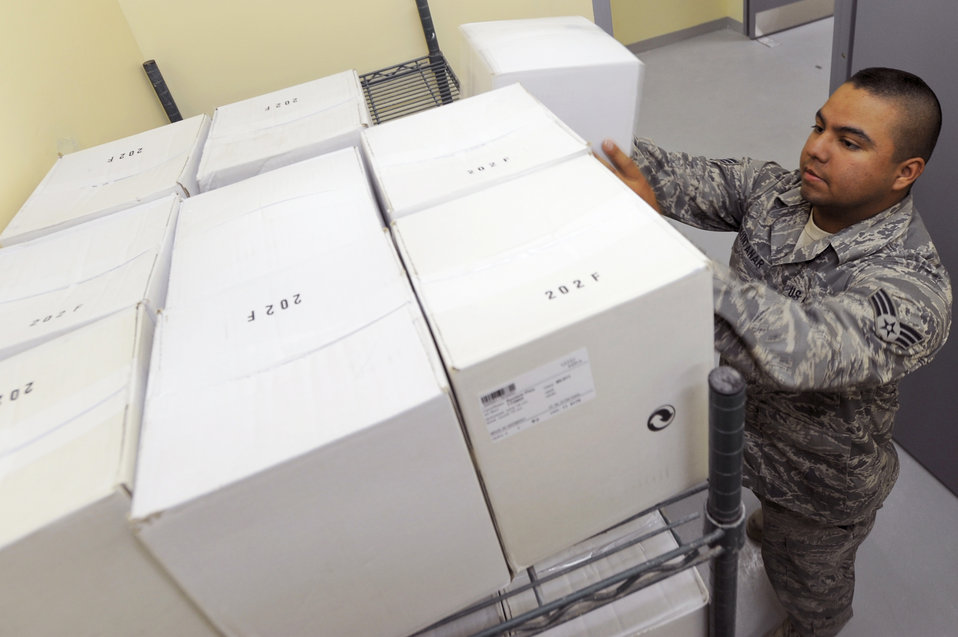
Feeding the force

Senior Airman Ricardo Quintanar stocks the new Coalition Compound Dining Facility with supplies March 23 at an air base in Southwest Asia. Airman Quintanar is a services journeyman with the 379th Expeditionary Force Support Squadron.